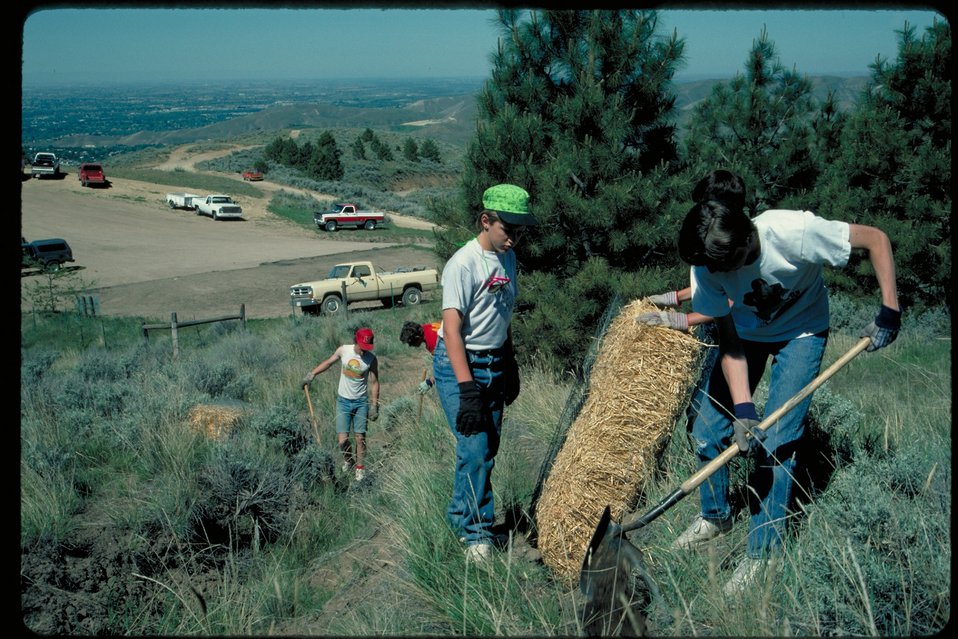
Boise Front volunteer project Four Rivers Field Office LSRD Lower Snake River District